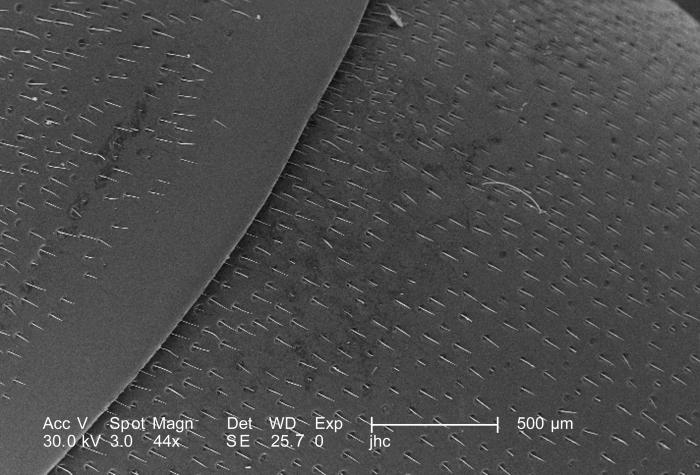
Under a magnification of 44X, this scanning electron micrograph (SEM) depicted some of the exoskeletal morphology found on the surface on an unidentified region of a hornet's exterior, where one chitinous plate was overlapping another. This insect was discovered in the suburbs of Decatur, Georgia. This hornet was a member of the Phylum Arthropoda, i.e., Arthro = jointed, and poda = legs, and the class Insecta, for it possessed three pairs of these jointed extremities. Note the hair-like 'setae', seen here adorning the insect's exoskeleton providing the hornet with data indicative of changes encountered in its environment such as chemical, thermal, and tactile queues.